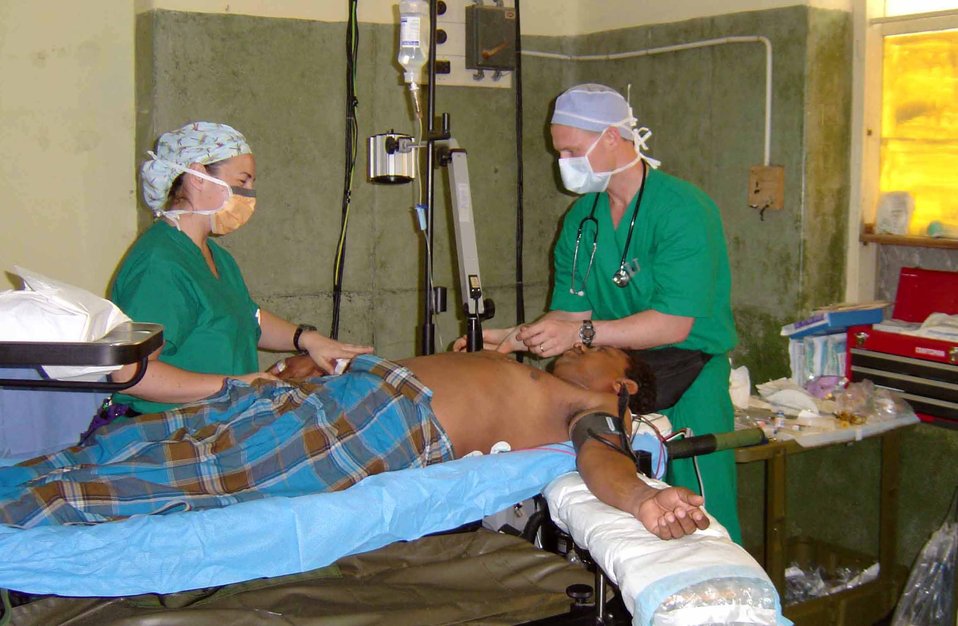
BRAVA team

JAFFNA, Sri Lanka -- Army Capt. Kate Harrison (left) and Maj. Troy Osborn prepare a 41-year-old Sri Lankan man for surgery to remove of keloid scars on his chest. Captain Harrison is an operating room nurse with the 135th Field Surgical Team in Yongsan Army Garrison, South Korea. Major Osborn is the 374th medical group anesthesia department medical director at Yokota Air Base, Japan. The medical specialists are here as part of a humanitarian surgical training mission, which continues through May 2.